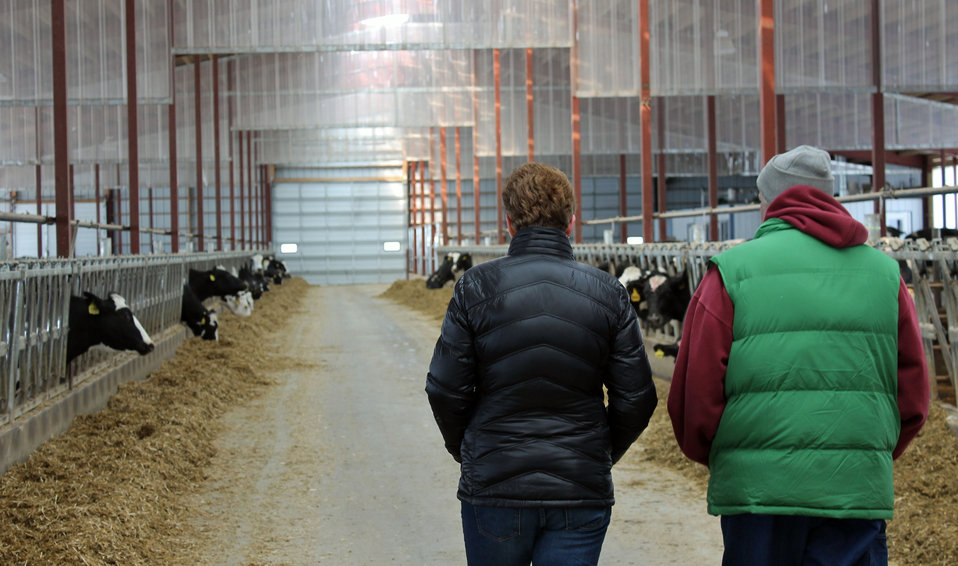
Agriculture Deputy Secretary Krysta Harden walks through the Wayside Dairy barn with owner Dan Natzke in Wisconsin on Apr. 15, 2014.